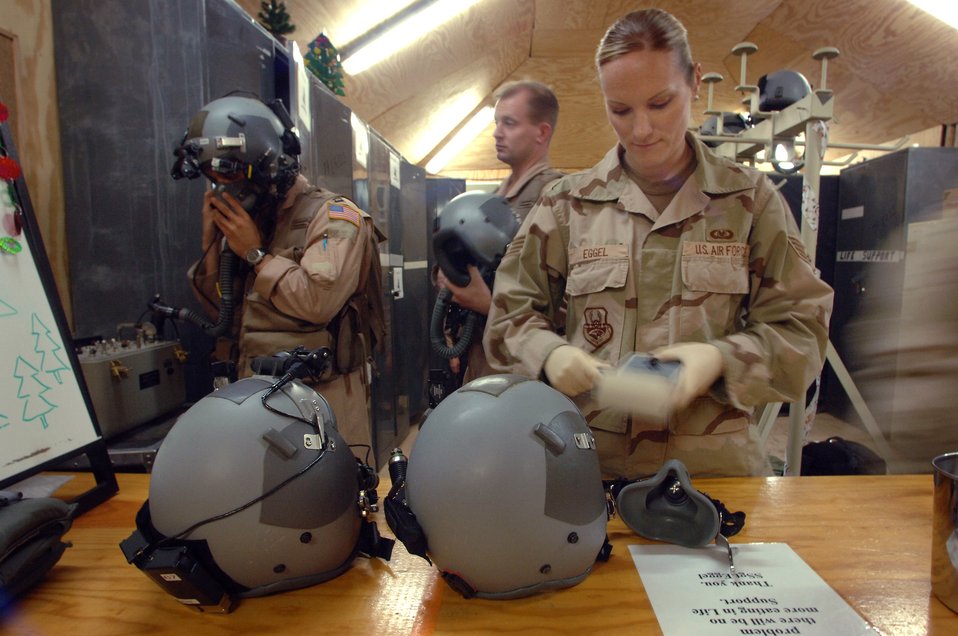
Serving through the season: Staff Sgt. Elizabeth Eggel

Staff Sgt. Elizabeth Eggel conducts periodic maintenance inspections on crew helmets before a refueling mission Dec 17. As the only life support technician deployed to the Horn of Africa, the six-year veteran from Davis-Monthan Air Force Base, Ariz., provides support to more than 40 Air Force, Navy and Marine aircrew members based at Camp Lemonier, Djibouti.